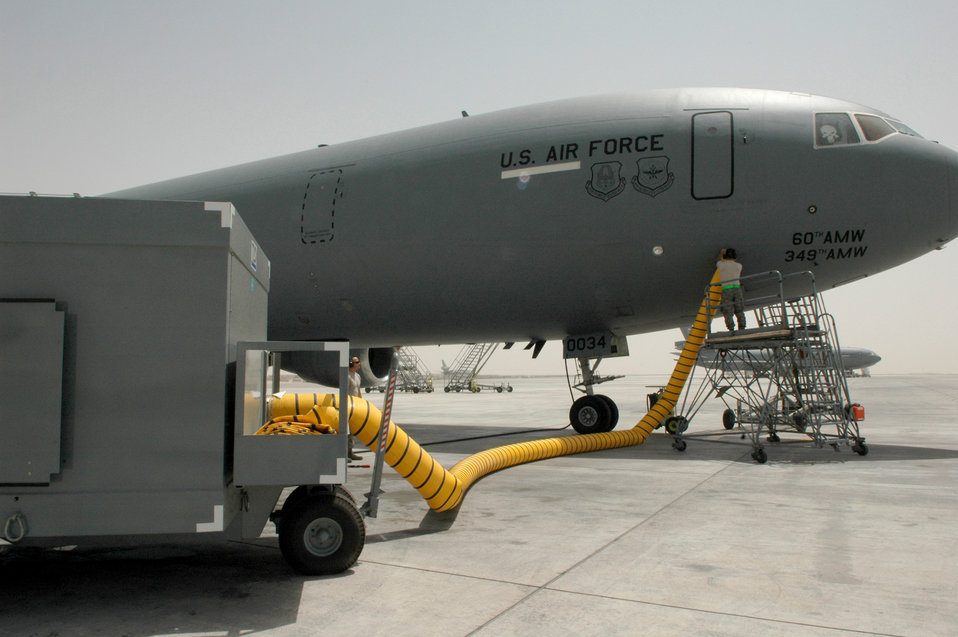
KC-10 in Southwest Asia

Airman 1st Class Gene Meredith seals an air cart hose to the side of a KC-10 Extender May 18, 2011, in Southwest Asia. Airman Meredith is a crew chief assigned to the 380th Expeditionary Aircraft Maintenance Squadron.